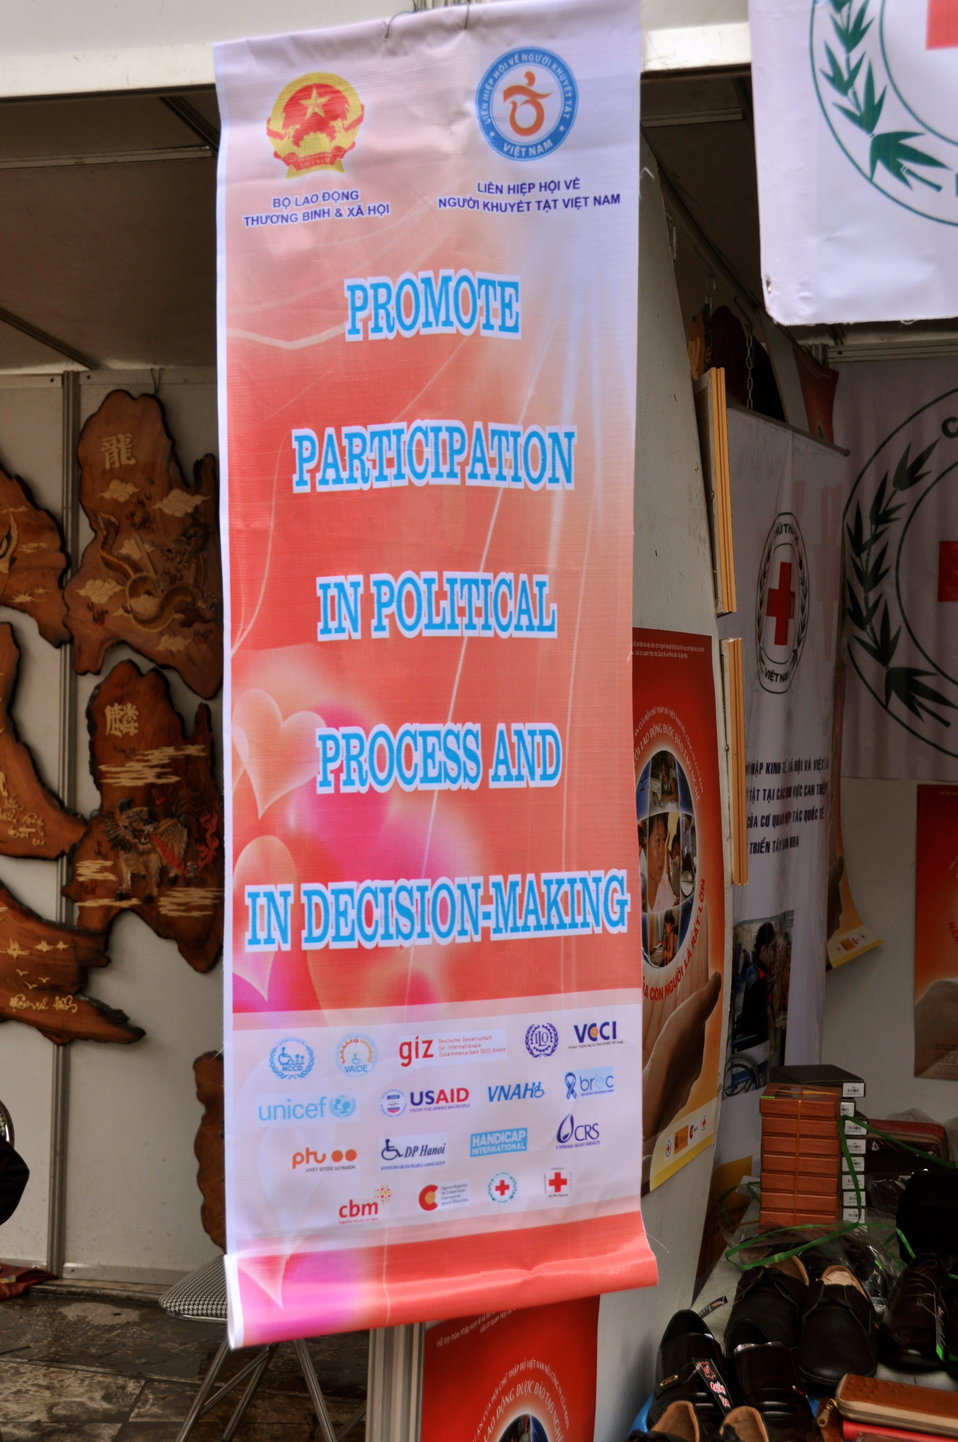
USAID joins celebration of International Day of Persons with Disabilities in Hanoi, Vietnam

December 2, 2012